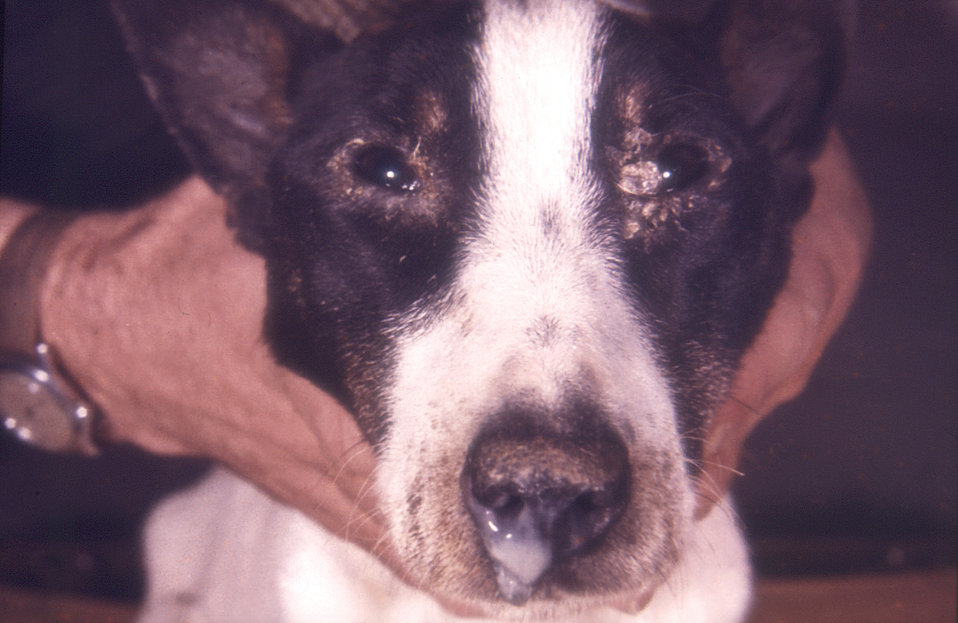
This image depicts a frontal view of a dog's head, which is exhibiting symptoms of an illness diagnosed as canine distemper virus (CDV). Symptoms included inflammation and discharge from both eyes, also known as conjunctivitis, and a discharge of infectious mucus from the dog's nose.